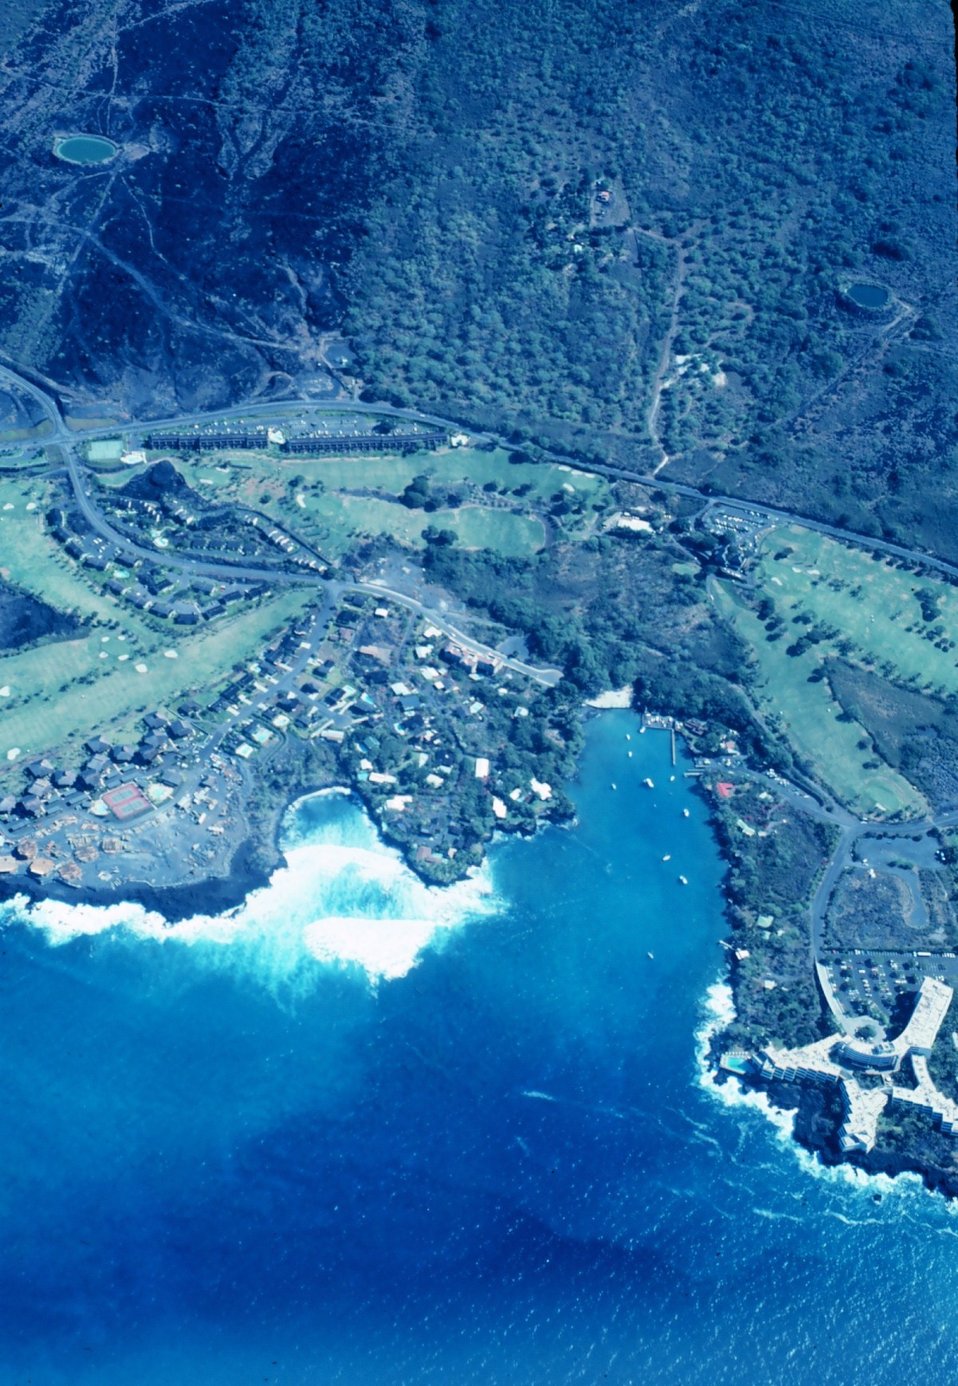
Flying over the Kona Coast